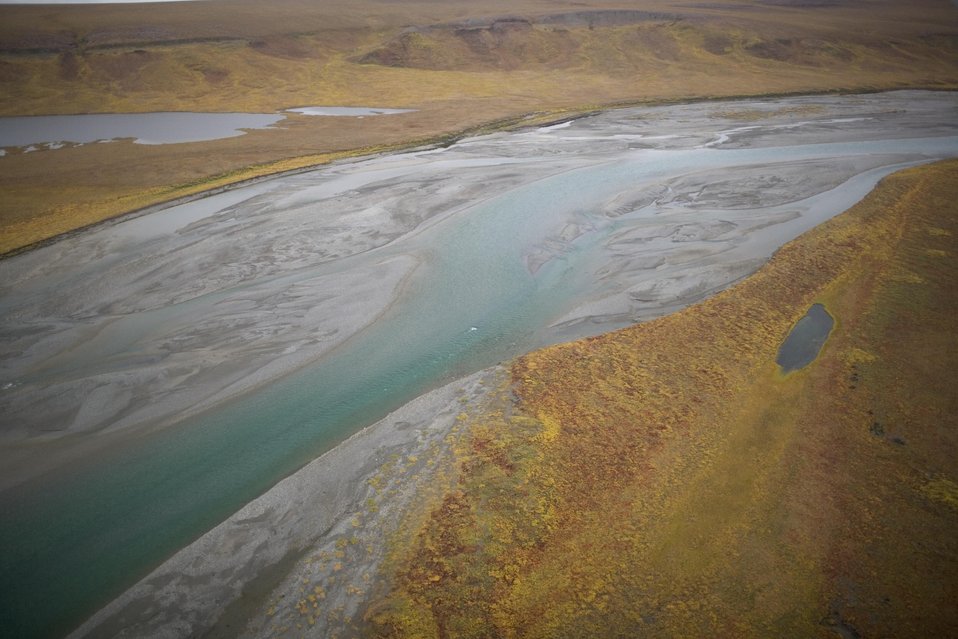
Arctic National Wildlife Refuge